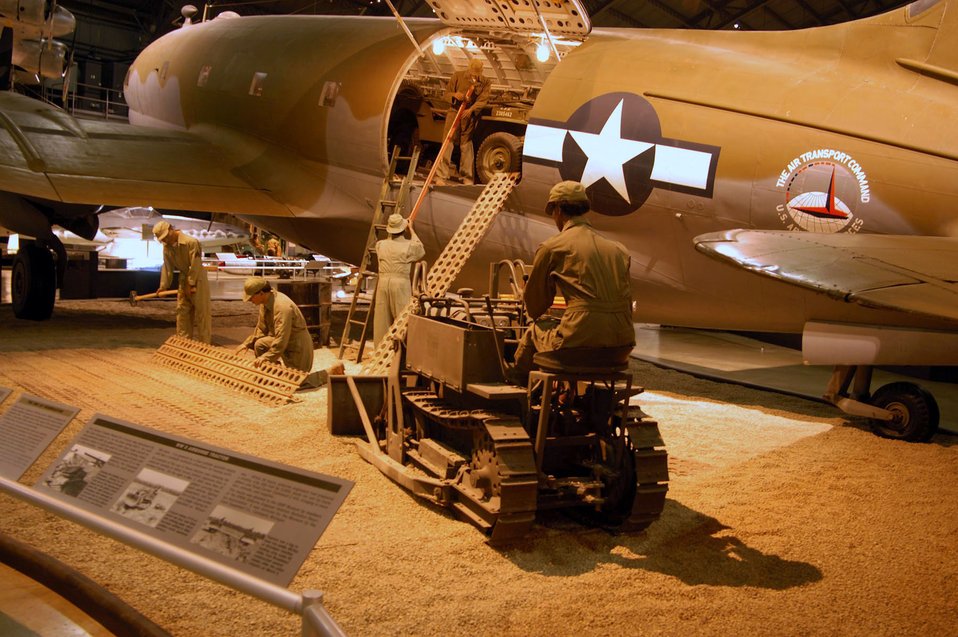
Museum celebrates Black History Month

The Engineer Aviation Battalion exhibit near the Curtiss C-46D at the National Museum of the U.S. Air Force is shown. The National Museum of the U.S. Air Force's celebration of Black History Month in February contains several exhibits in the Air Power Gallery feature contributions from prominent black Airmen in Air Force history.